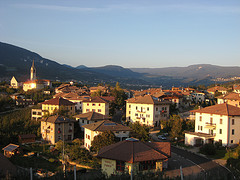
Italiano: Dambel